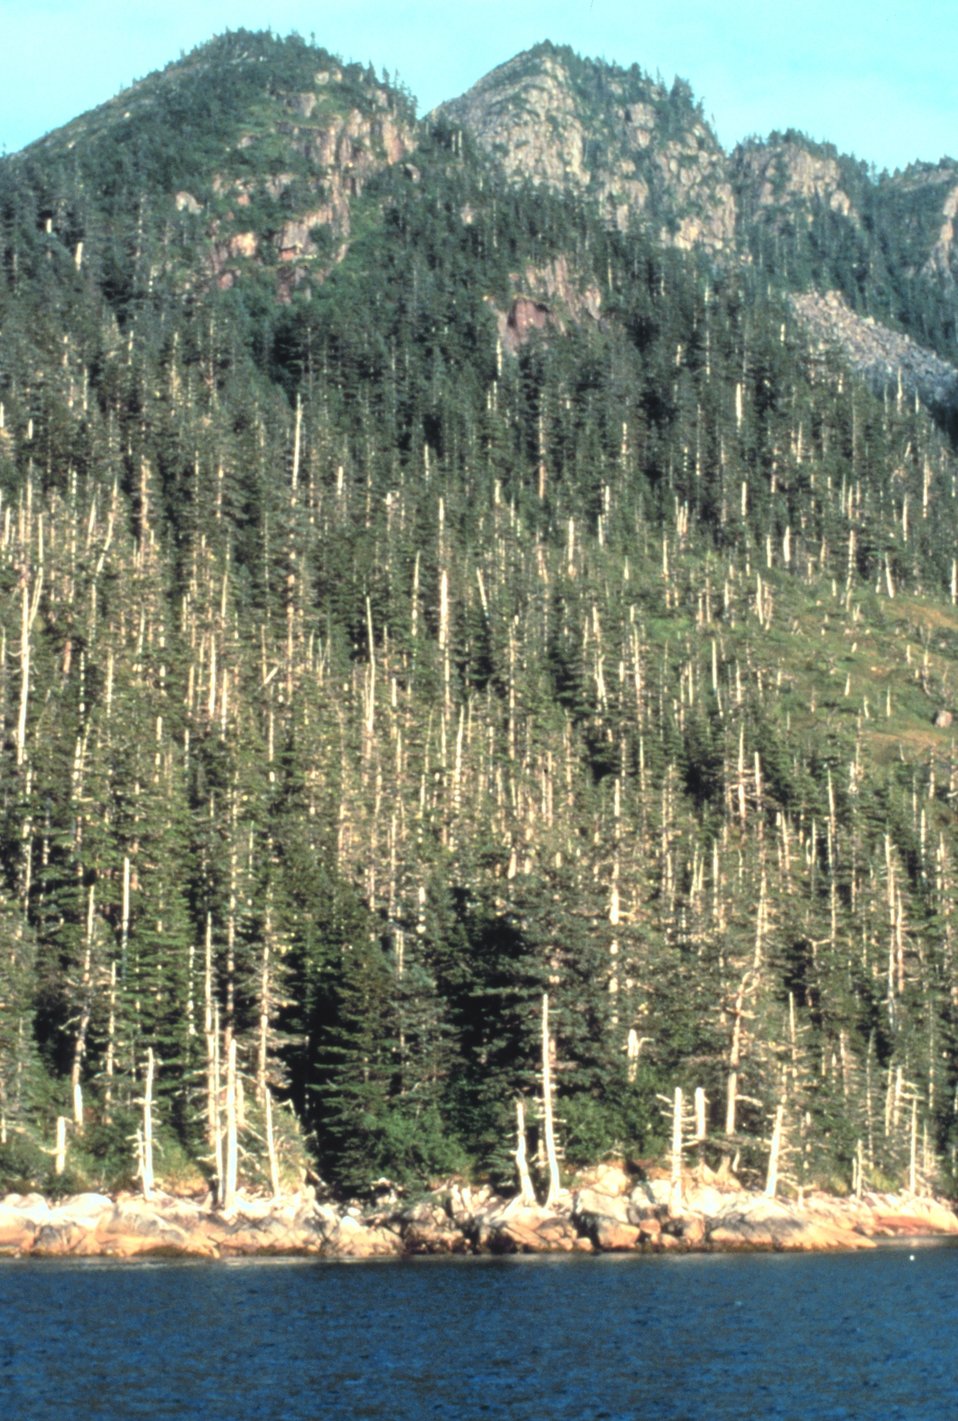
Rockbound shoreline of Prince William Sound area with wooded hillside